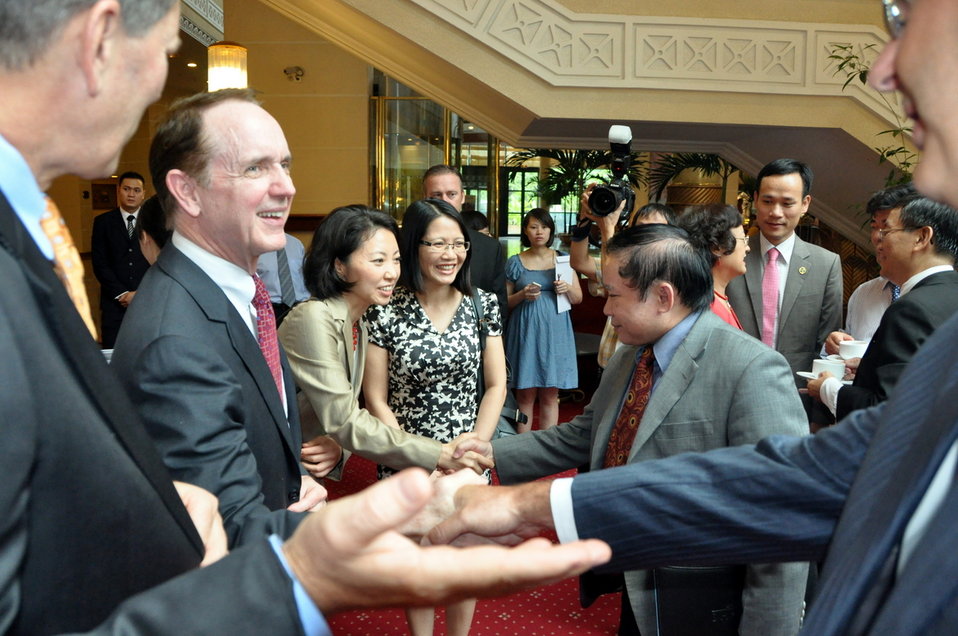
Higher Engineering Education Alliance Program Expansion Launch

Hanoi, August 20, 2012.